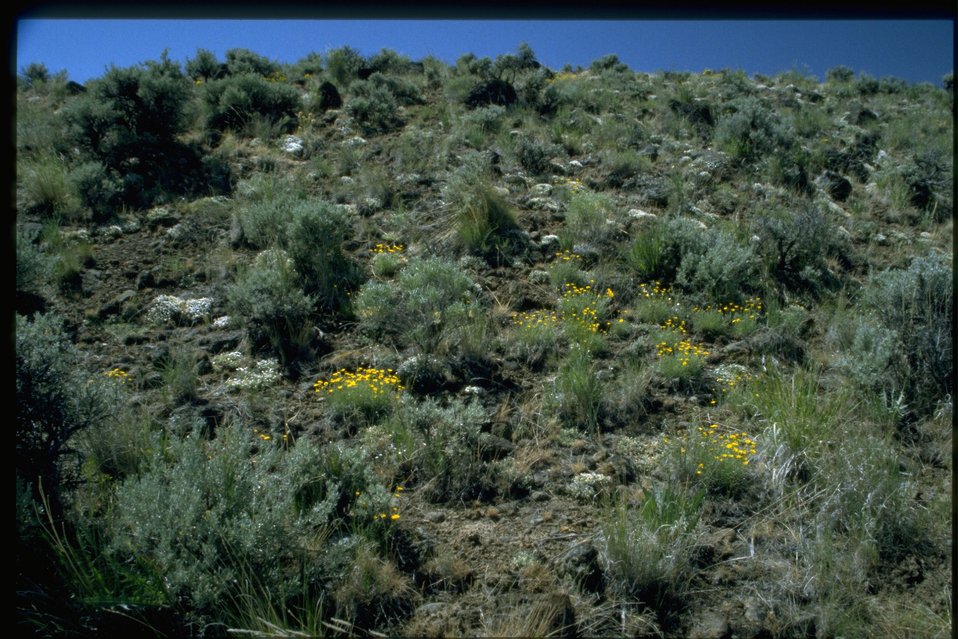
Far shot of balsamroot habitat.